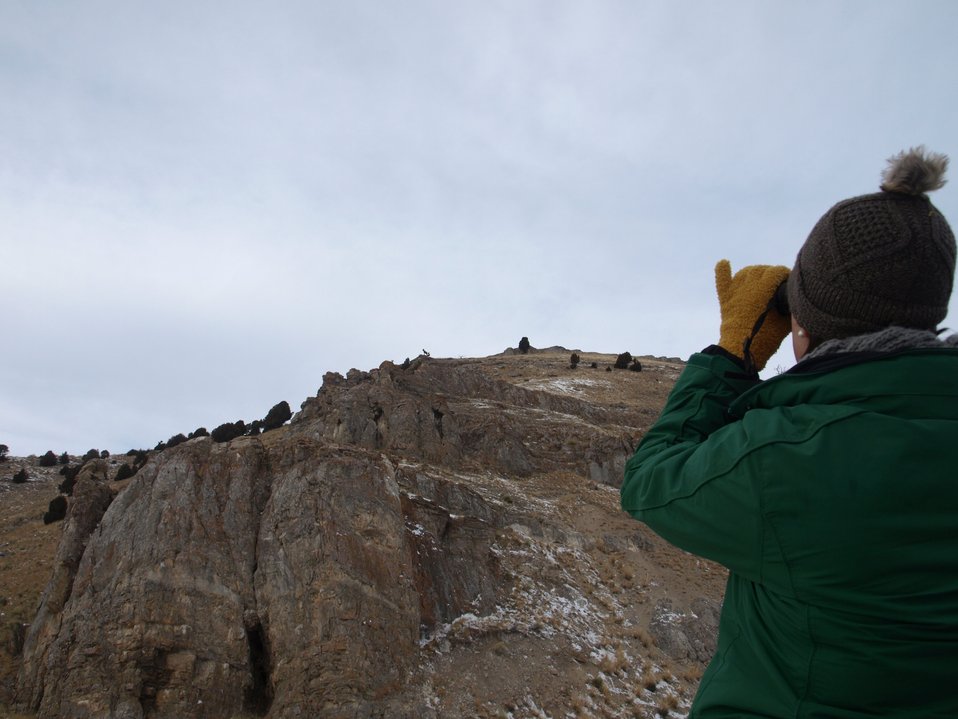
Bighorn Sheep Antics

A wildlife viewer keeps her eye on a bighorn sheep at the top of the rocks along the skyline.